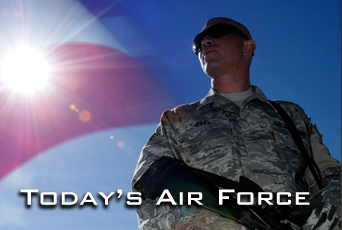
Latest 'Today's Air Force' now available